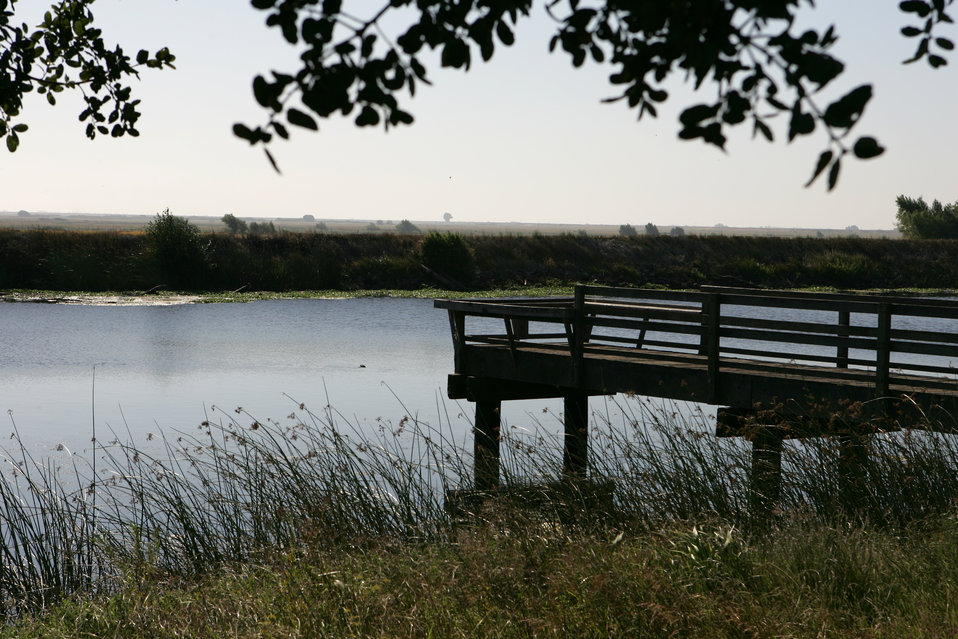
Twitchell Island,Calif.(Sept.1,2006--A lazy summer morning in the delta on Twitchell Island.The U.S. Army Corps of Engineers, Sacramento and San Francisco Districts, has multiple studies and projects addressing the mission areas of Ecosystem Restoration, Flood Risk Management, Navigation, and Watershed Planning within the Delta region. The study boundaries and mission areas of these ongoing projects sometimes coincide, complicating planning and coordination efforts. In addition to the projects undertaken by the Corps, numerous other Federal, State, and local efforts are underway. The key component to the success of each of these initiatives will involve sharing of information, cooperation, collaboration, and partnership.